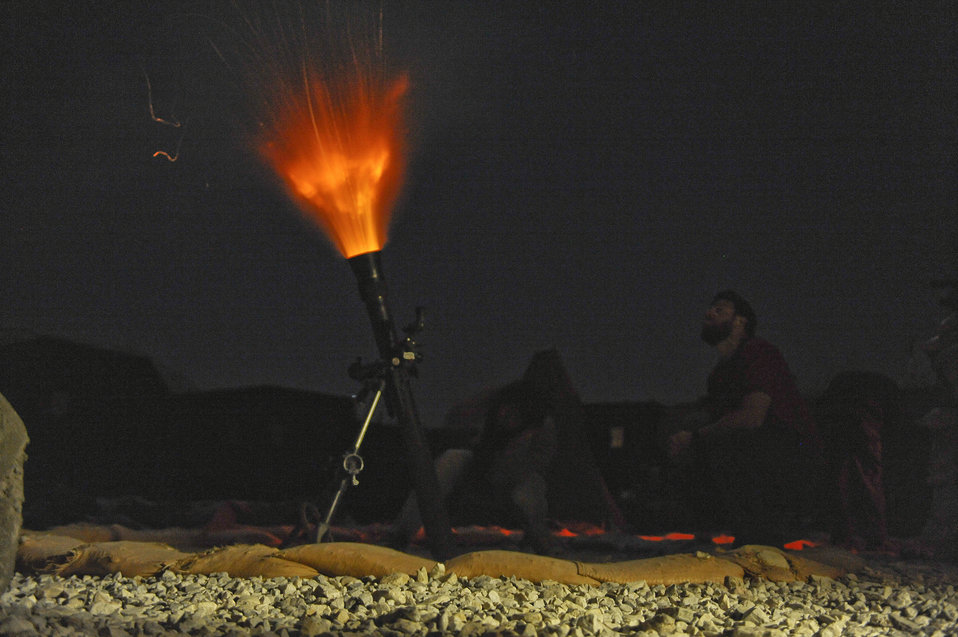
Ka-boom!

Special operations forces with the International Security Assistance Force fire an 81 mm mortar at an insurgent position from Forward Operating Base Kutschbach, Afghanistan, Nov. 18, 2010. The ISAF SOF fired mortars to drive back insurgents attacking an Afghan security forces checkpoint.